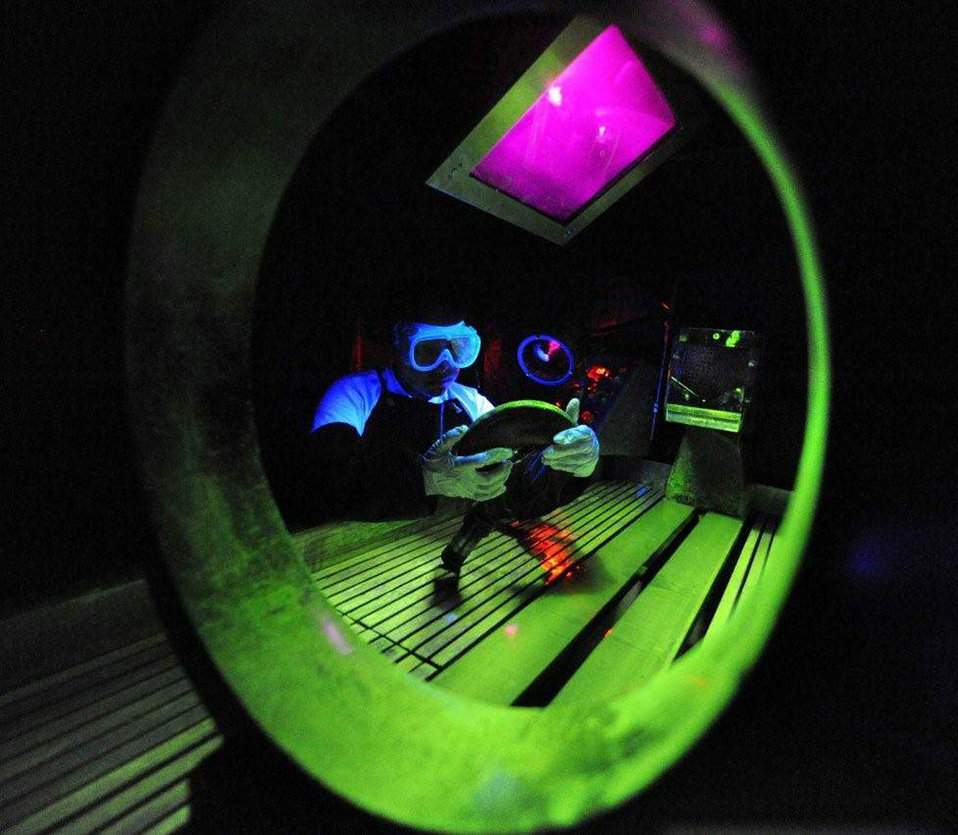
Photo essay: Taking a closer look

Senior Airman Lilia Linares uses a fluorescent magnetic particle process to inspect an aerospace ground equipment hook for cracks May 27 at Charleston Air Force Base, S.C. The nondestructive inspection section inspects more than 40,000 pieces of weapon systems and nonweapon systems assets a year. Airman Linares is a nondestructive inspection journeyman with the 437th Maintenance Squadron.